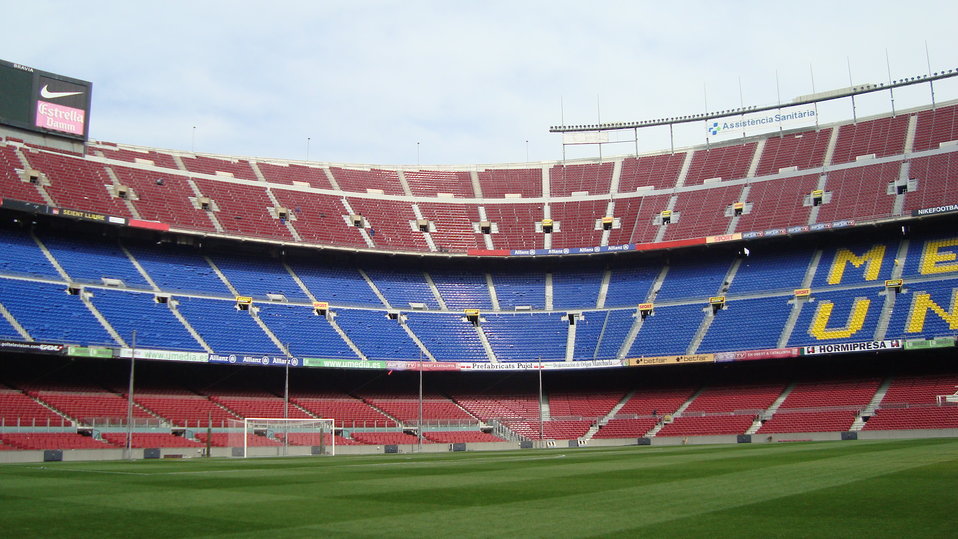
Deutsch: Leeres Camp Nou